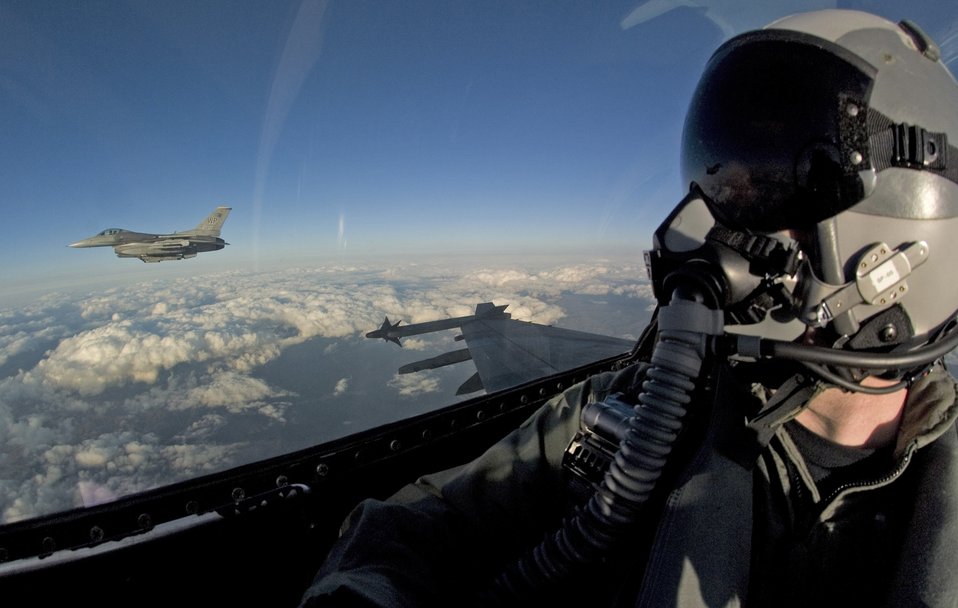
Close Air Support

F-16 Fighting Falcons from the 80th Fighter Squadron at Kunsan Air Base, South Korea, join up for a post-mission safety check before returning to base Nov. 29. The aircraft were part of a close-air-support training mission over a designated training area.